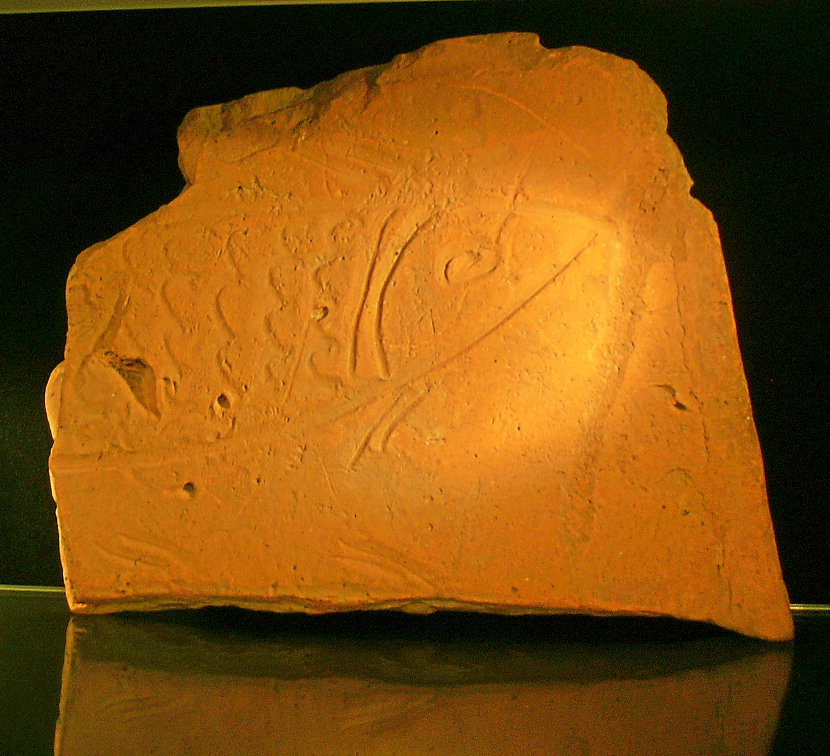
Deutsch: Römischer Ziegel mit der eingeritzten Darstellung eines Fischkopfes (RM Wallsee)